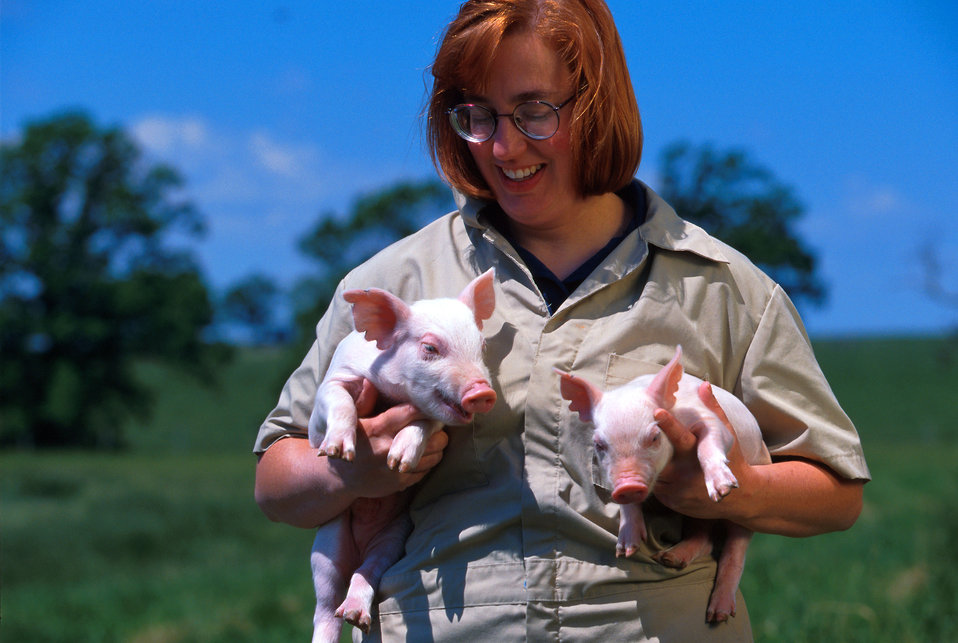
U.S. Department of Agriculture (USDA) Agricultural Research Service (ARS) animal physiologist Cheryl Dyer observes healthy, 10-day-old piglets.